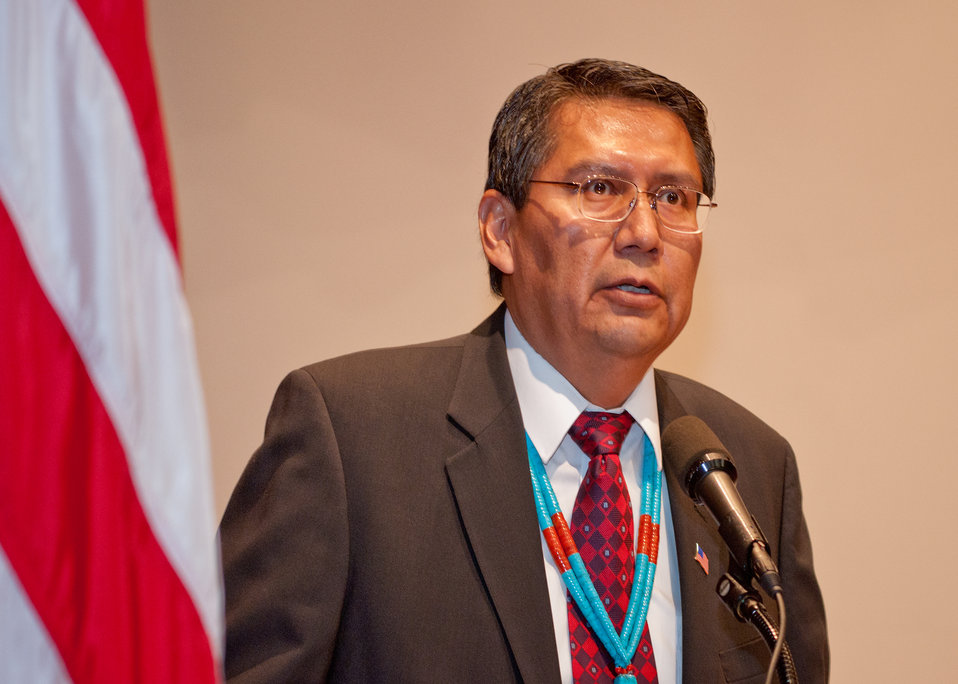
Noller Herbert, Director, Conservation Engineering Division, Natural Resources Conservation Service offered the blessing for the Agriculture Native American Indian Heritage Month celebration at the United States Department in Washington, DC, on Wednesday, November 16, 2011. The theme of this year’s event is, “Native Youth: Cultivating the Future.”